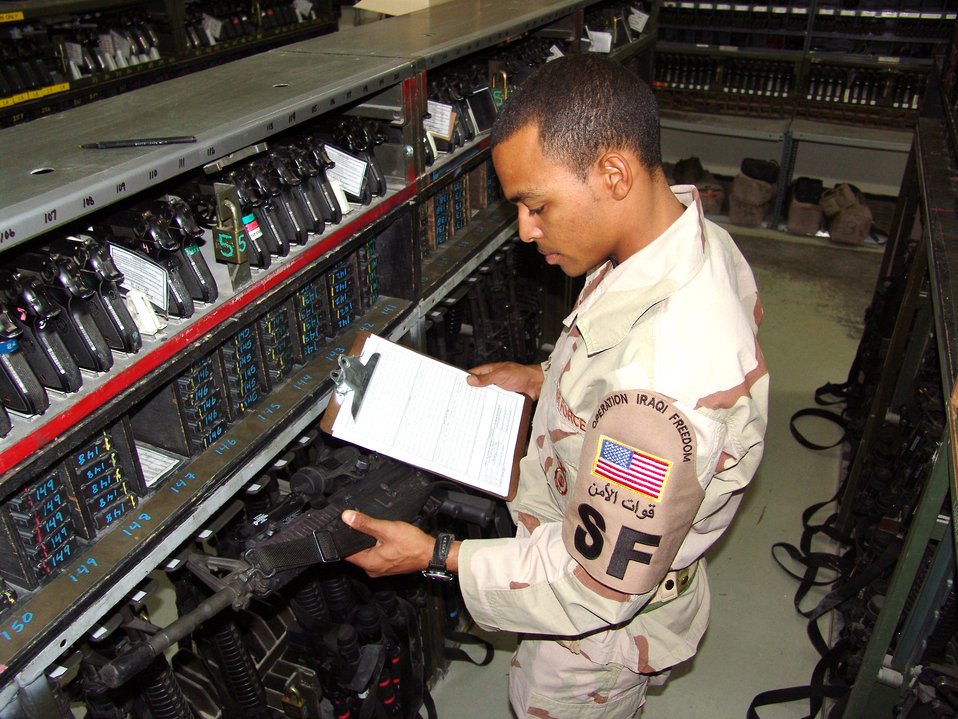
Weapon perfection

SOUTHWEST ASIA -- Senior Airman Sidley Young inventories M-4 rifles at a forward-deployed location. He is assigned to the 386th Expeditionary Security Forces Squadron armory and is deployed from Dover Air Force Base, Del.